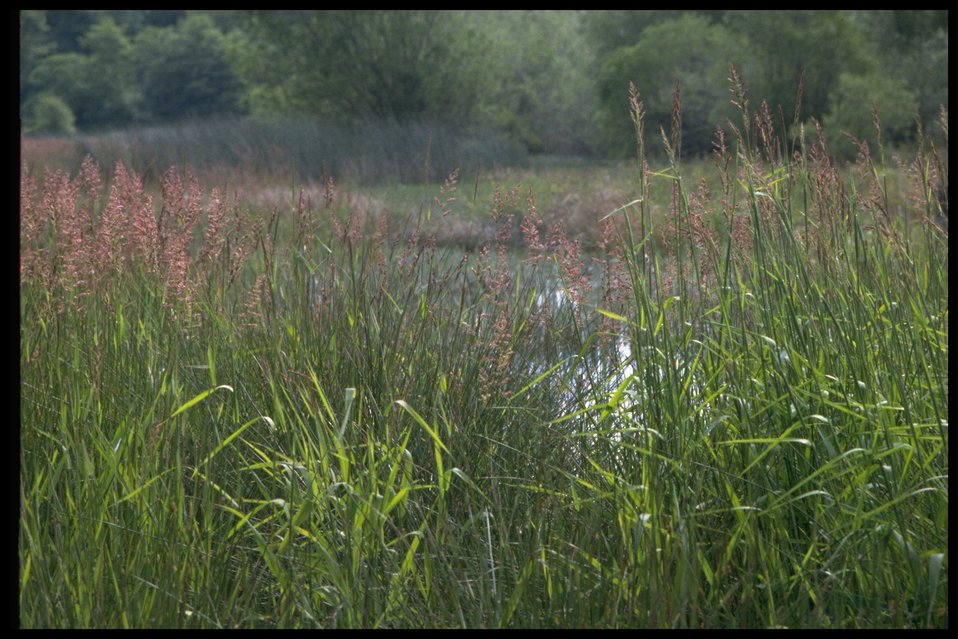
Chadwick Hill Marsh.